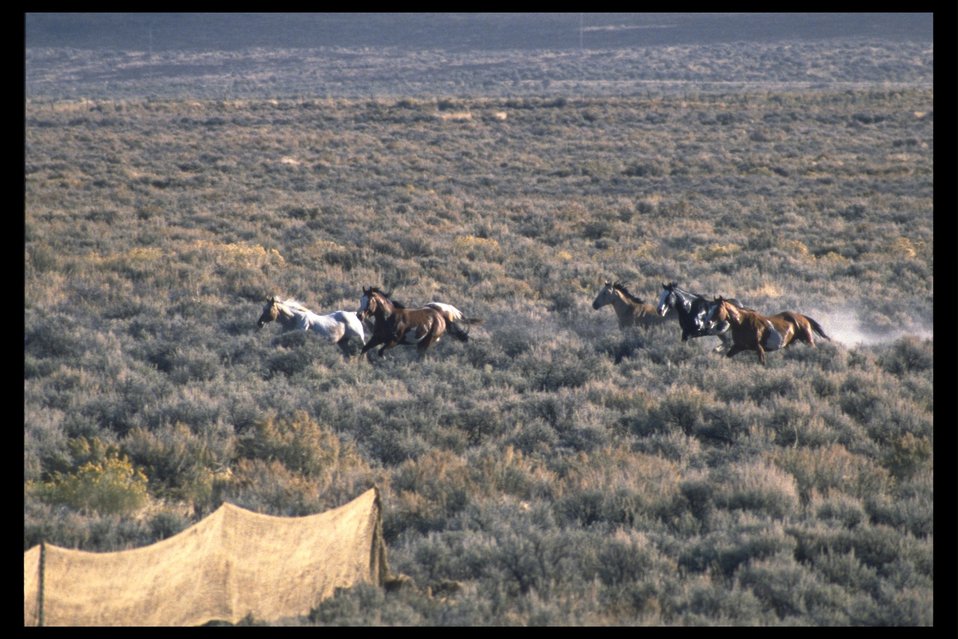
Wild horses approach trap in the South Steens Horse Management Area.